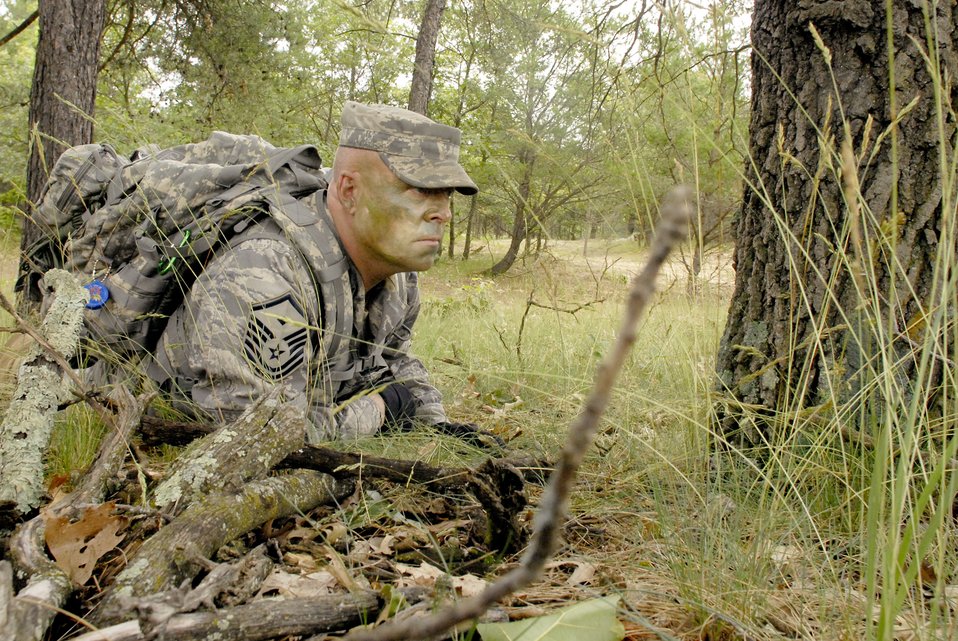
Can you see me?

Master Sgt. Kent Falstad takes part in a land navigation exercise June 13, 2010, at Volk Field Combat Readiness Training Center in Wisconsin. Sergeant Falstad is the first sergeant with the Wisconsin Air National Guard's 115th Security Forces Squadron.